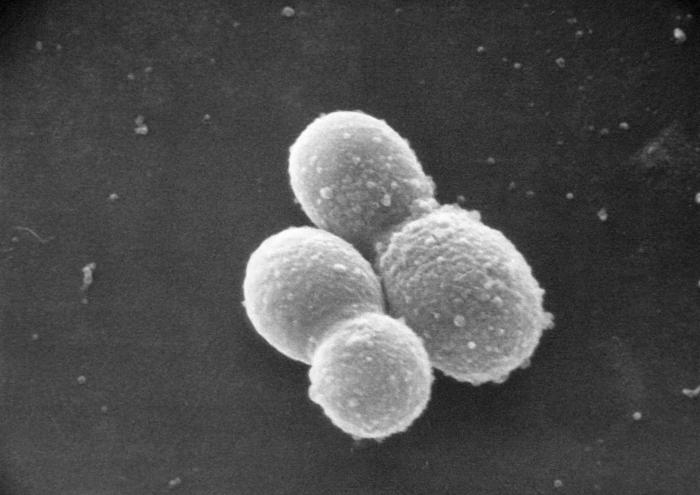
Scanning Electron Micrograph of Malassezia furfur